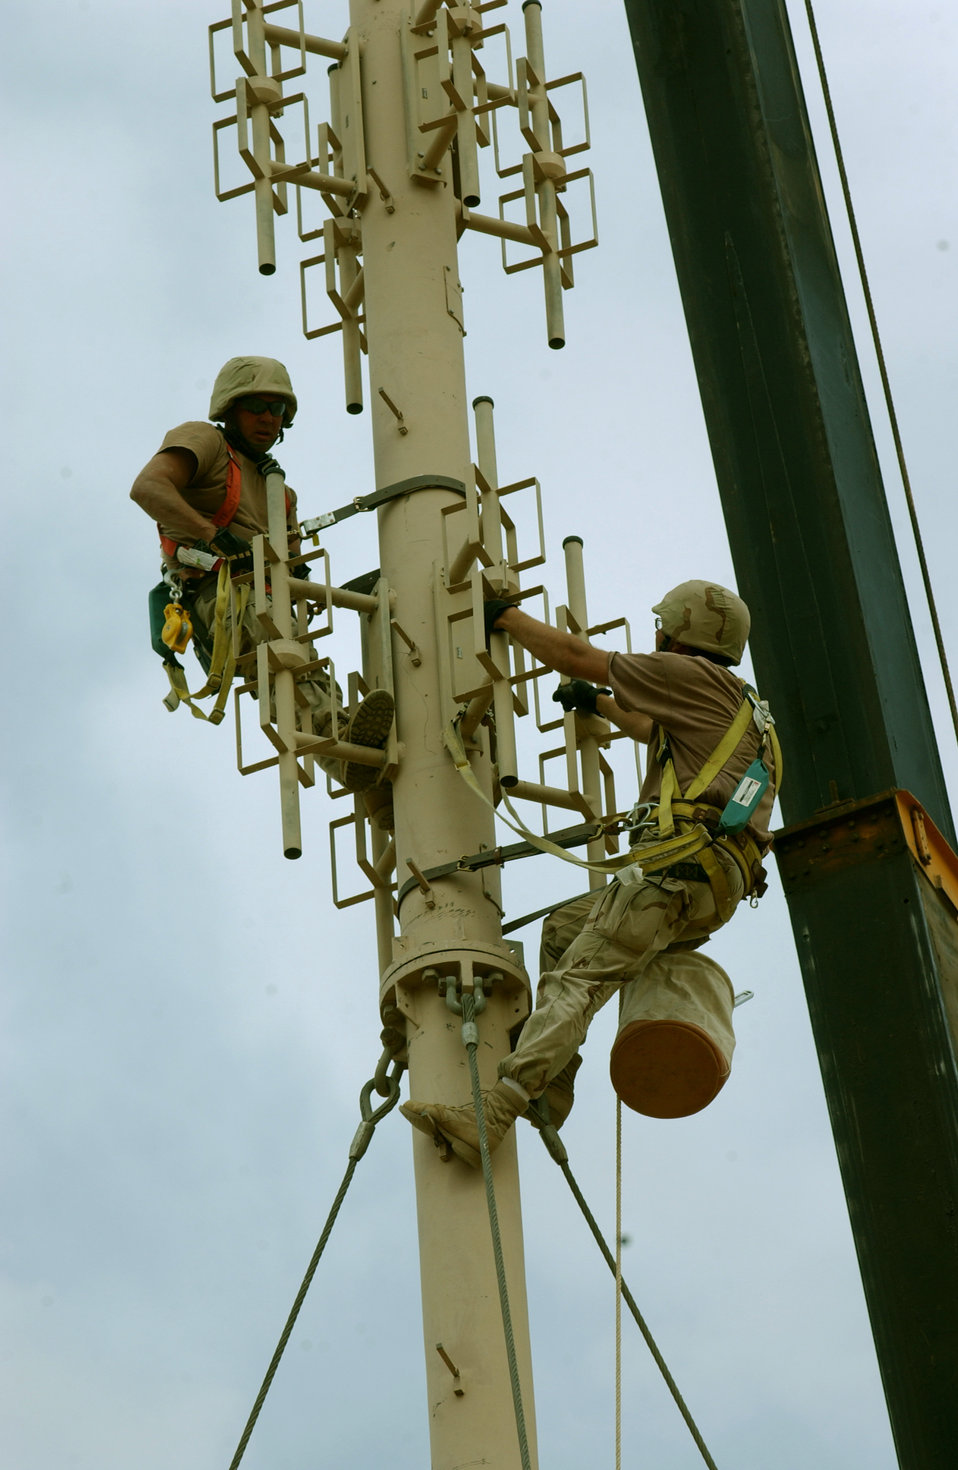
Comm Pole

KIRKUK AIR BASE, Iraq -- Master Sgt. Vincent Tanner, left, and Tech. Sgt. Scott Prows begin to dismantle an Iraqi radio tower here, Oct 14, 2003. The tower will be reutilized and relocated to improve land mobile radio and AFN transmitter reception. Tanner and Prows are assigned to the 506th Expeditionary Communications Squadron Engineering and Infrastructure Branch.